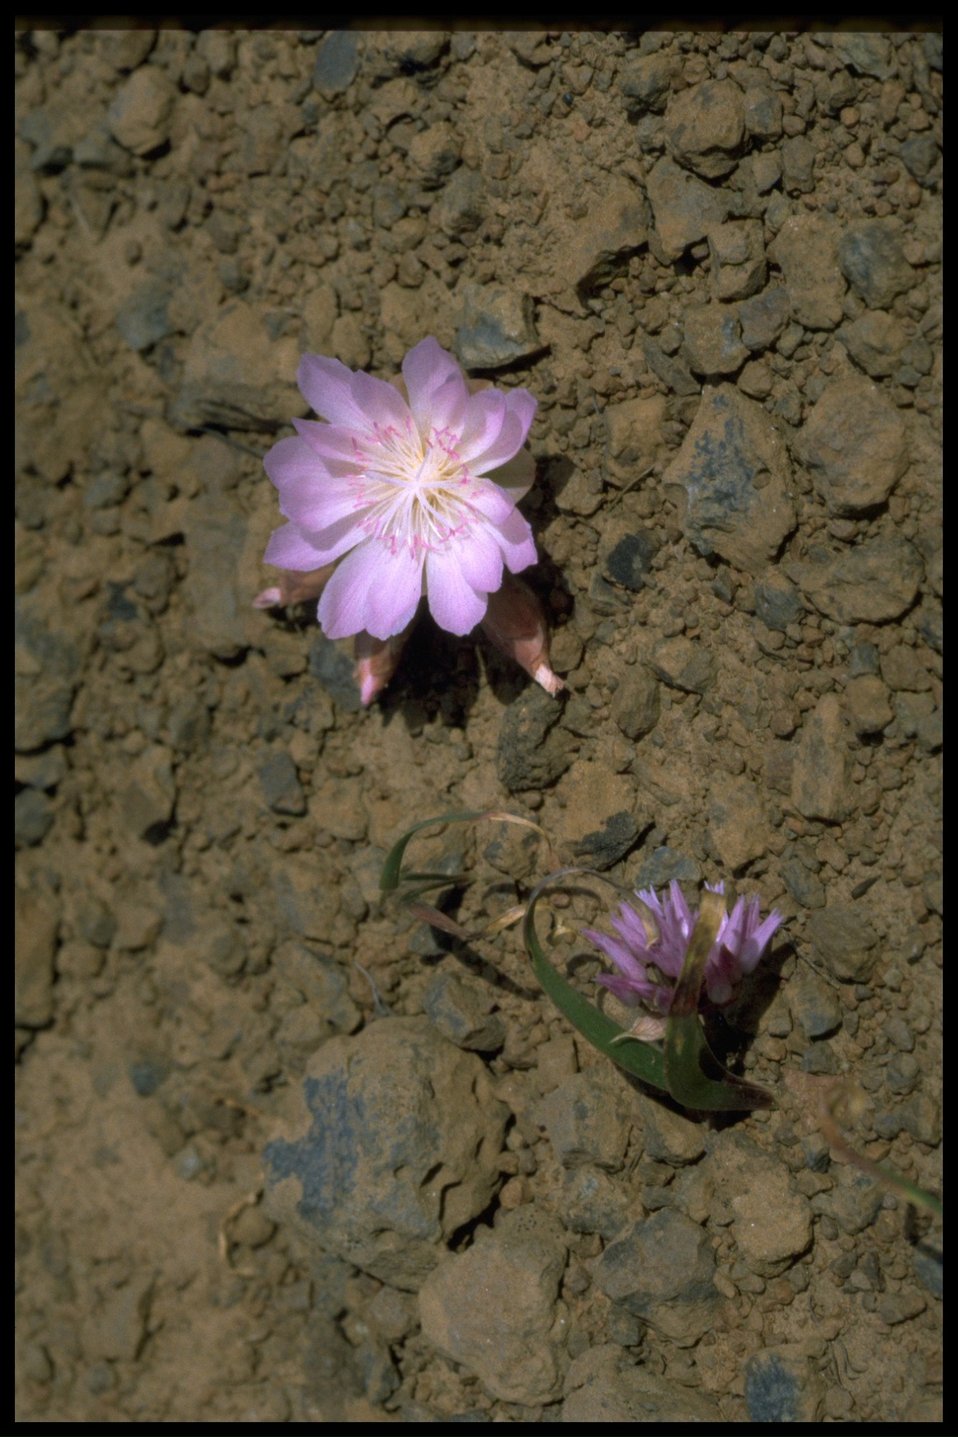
Medium hot of Bitterroot wildflower and Tolmie's onion